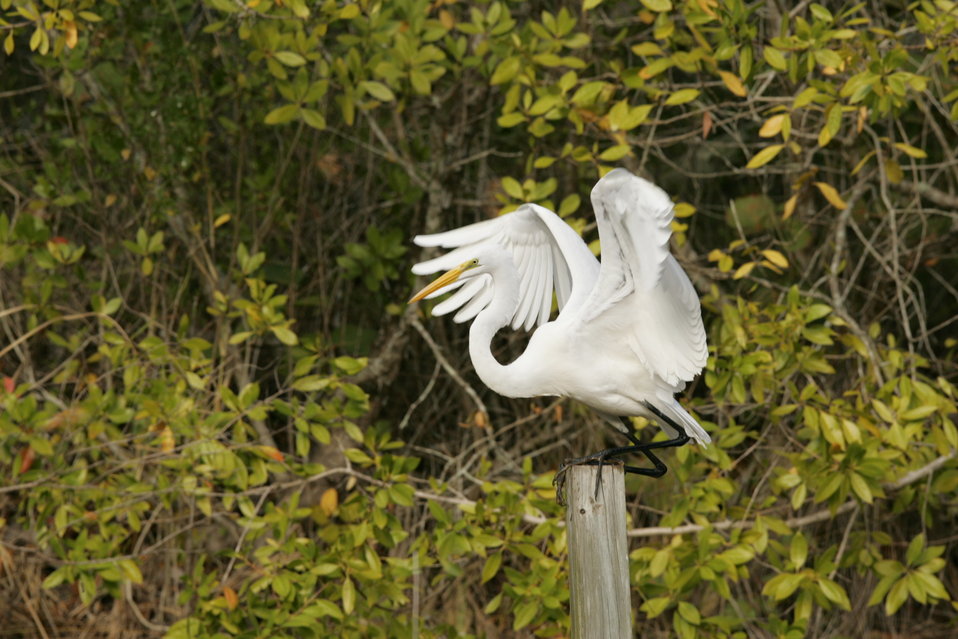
Great Egret, J.N. 'Ding' Darling NWR